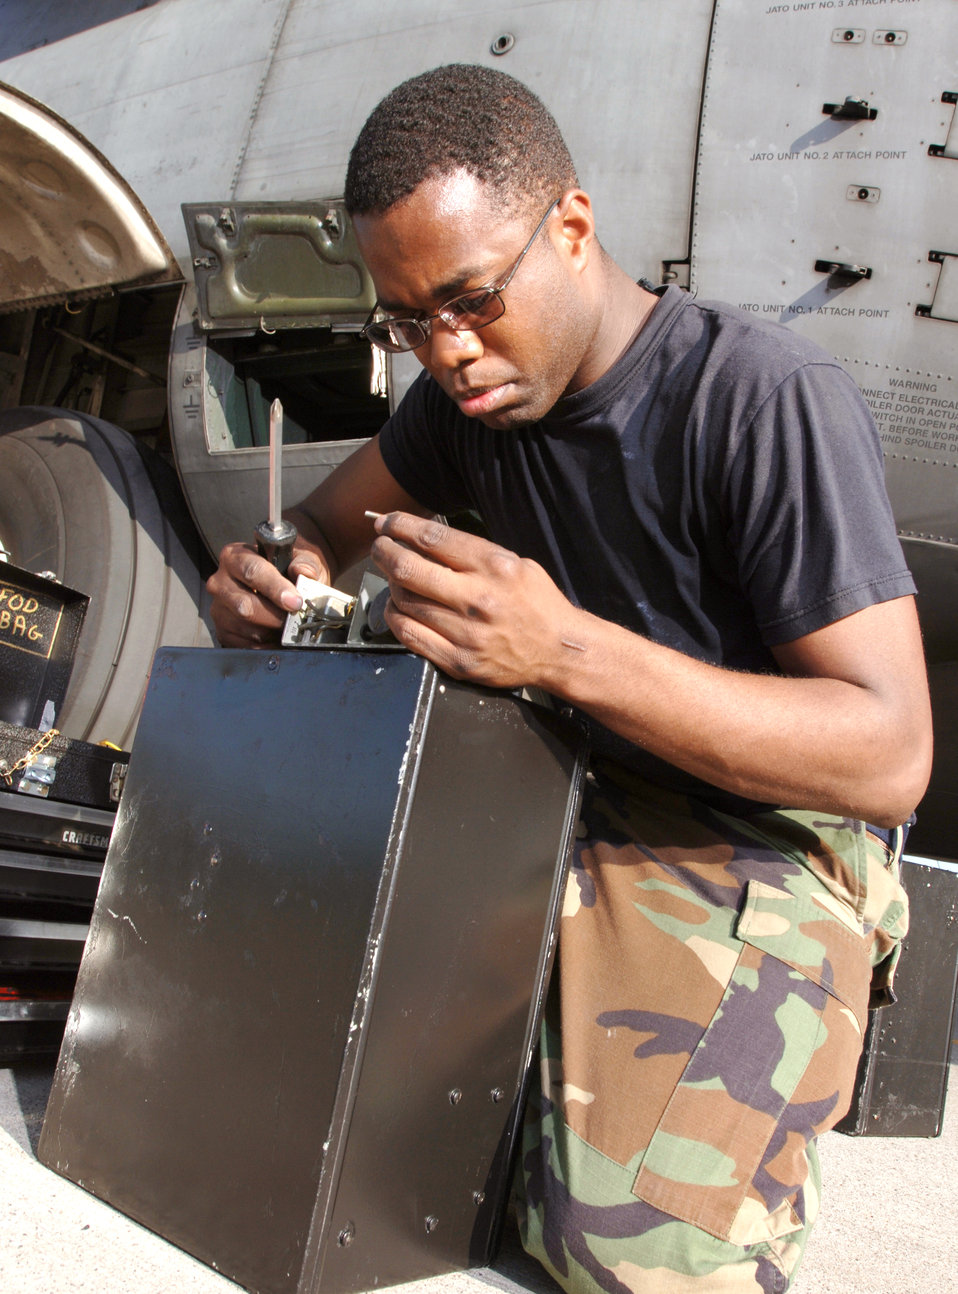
Checkin' things out

YOKOTA AIR BASE, Japan -- Staff Sgt. Anthony Page inspects an automatic direction finder unit on a C-130 Hercules. Airmen with the 374th Maintenance Squadron here inspect, service and repair assigned and in-transit C-130 aircraft. Sergeant Page is a communications navigation technician with the squadron.